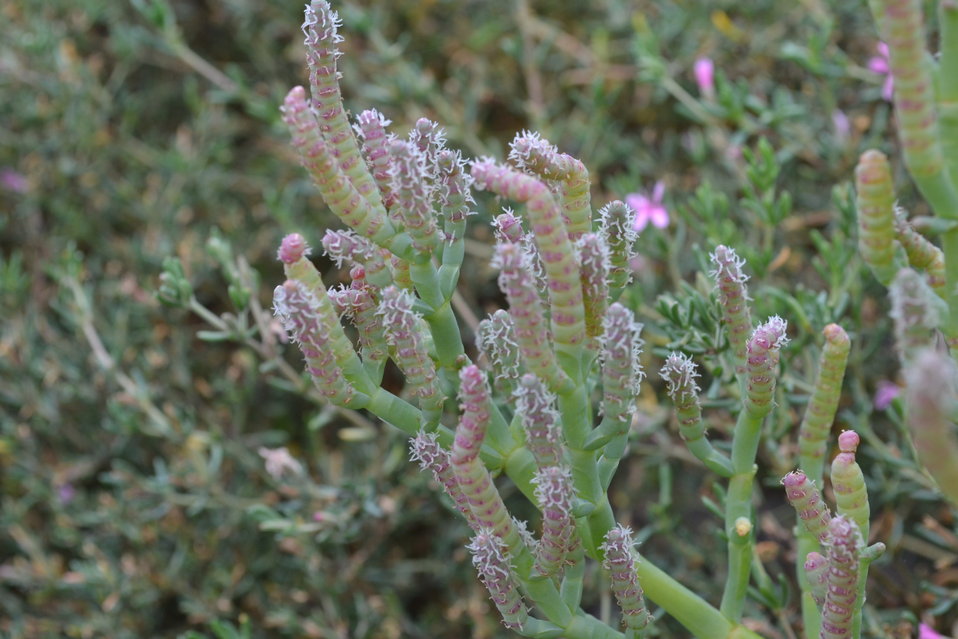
Pickleweed in bloom!